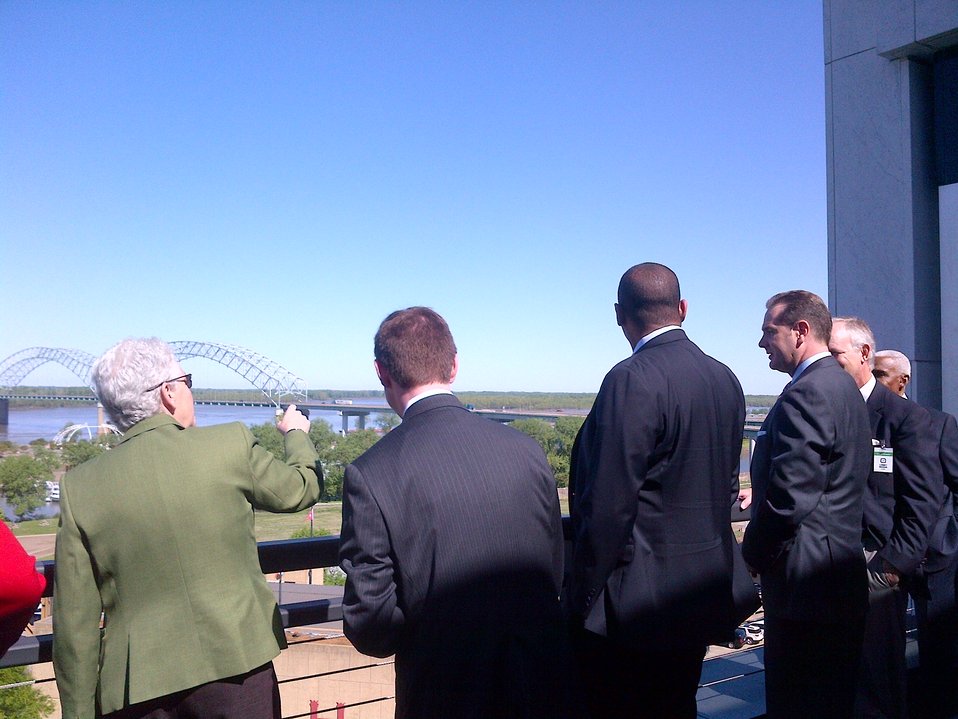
Viewing the Harahan Bridge

Administrator Gina McCarthy, DOT Secretary Anthony Foxx, and Memphis elected officials and community leaders look at the Harahan Bridge, which will include bicycle and pedestrian paths to connect Tennessee and Arkansas.